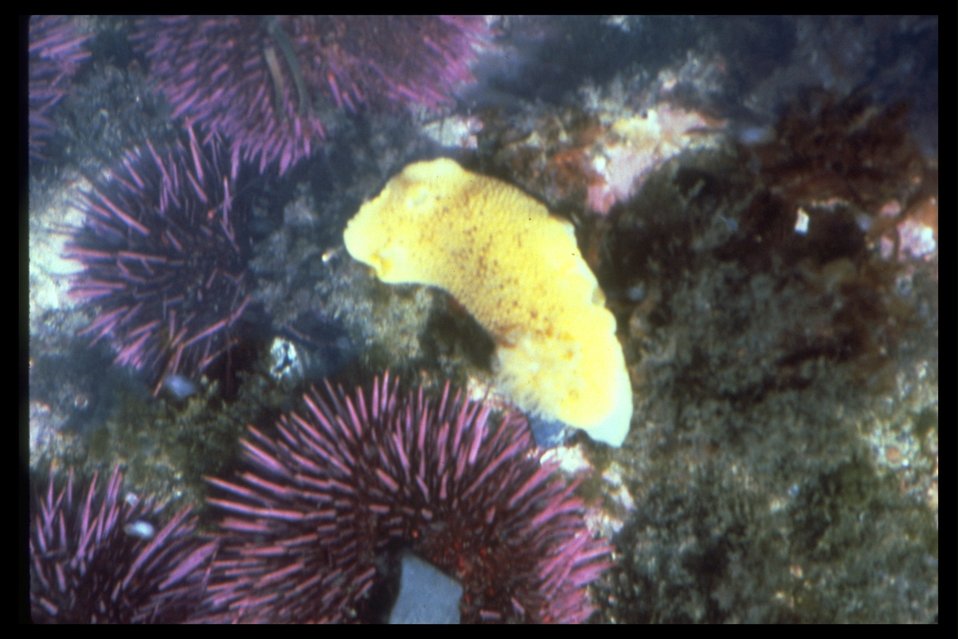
Sea Lemon and Purple Sea Urchins.